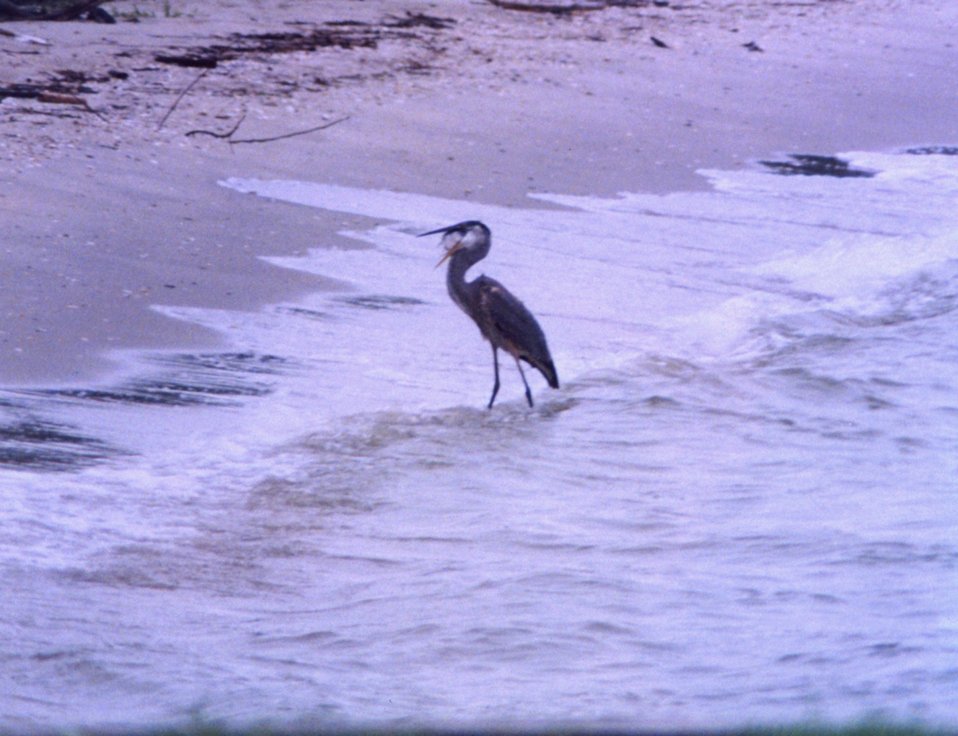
A Great Blue Heron trying valiantly to swallow a large fish. He finally had to give up.